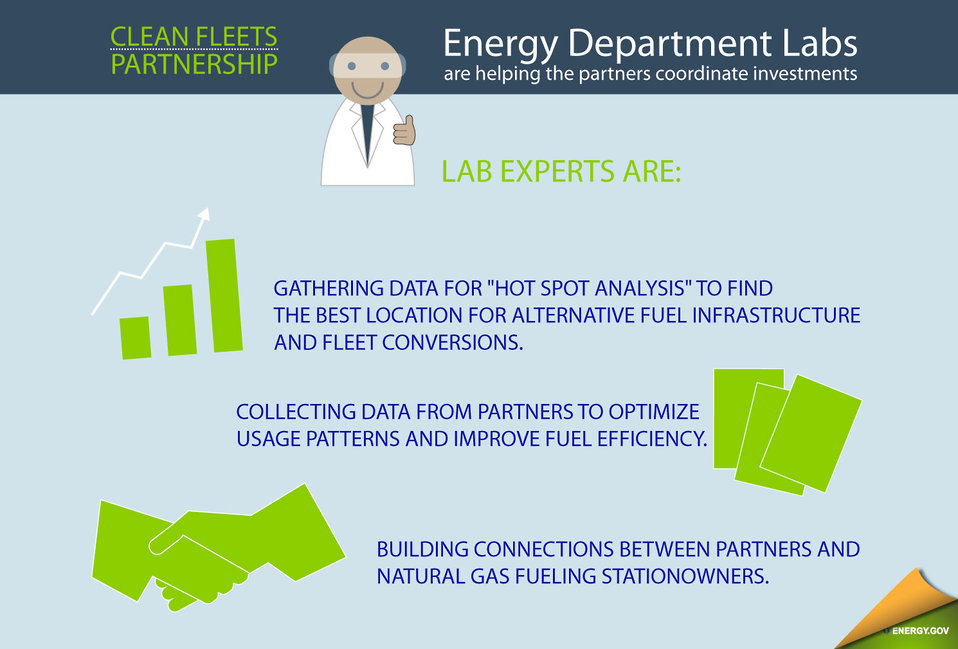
3-19 NEW Clean Fleet 2